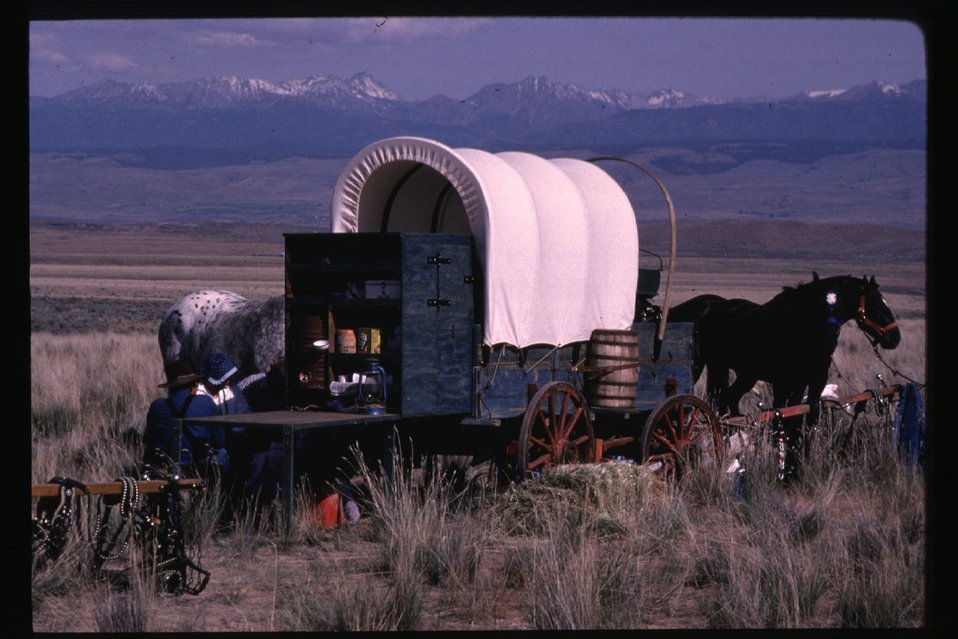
Wagon Oregon Trail Reenactment USRD Upper Snake River District